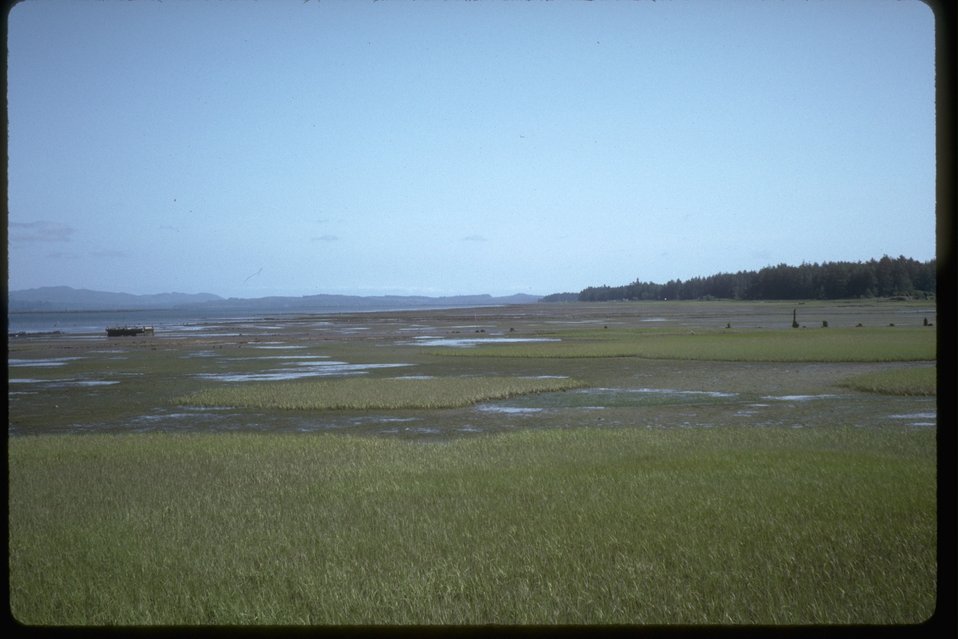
Wetland (lintec) on the west side of SummerLake near Paisley.